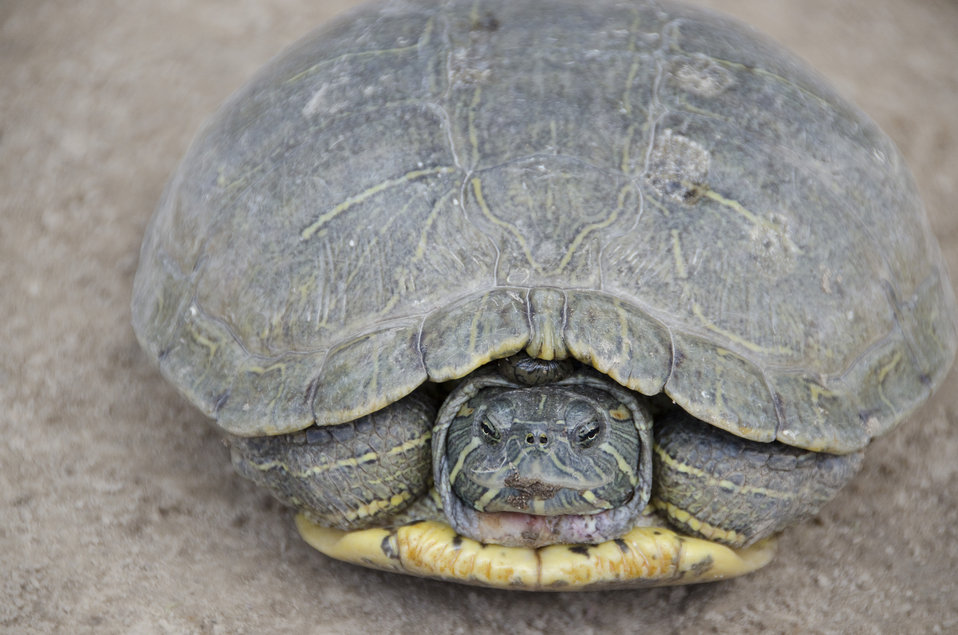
Red eared slider

A red eared slider bid a fond farewell to the Chinese and U.S. delegates.